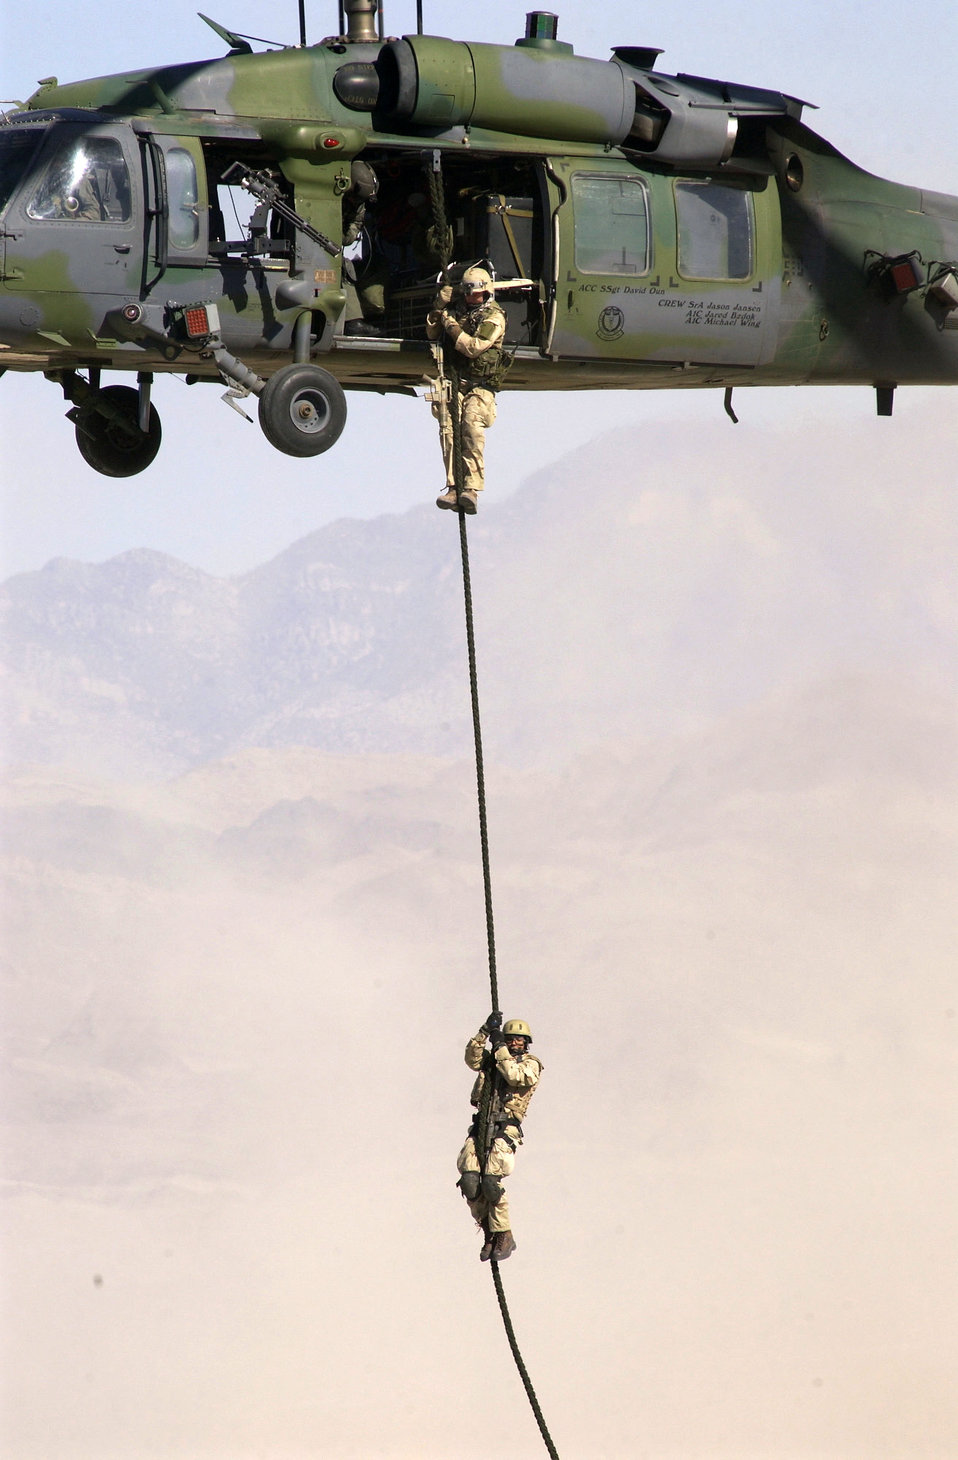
Hey folks, watch this!

NELLIS AIR FORCE BASE, Nev. -- Airmen from the 58th Rescue Squadron here rappel from their HH-60 Pave Hawk helicopter during a simulated rescue of a downed pilot. The simulation was part of a quarterly firepower demonstration which shows off the Air Forces' full array of warfighting capabilities.